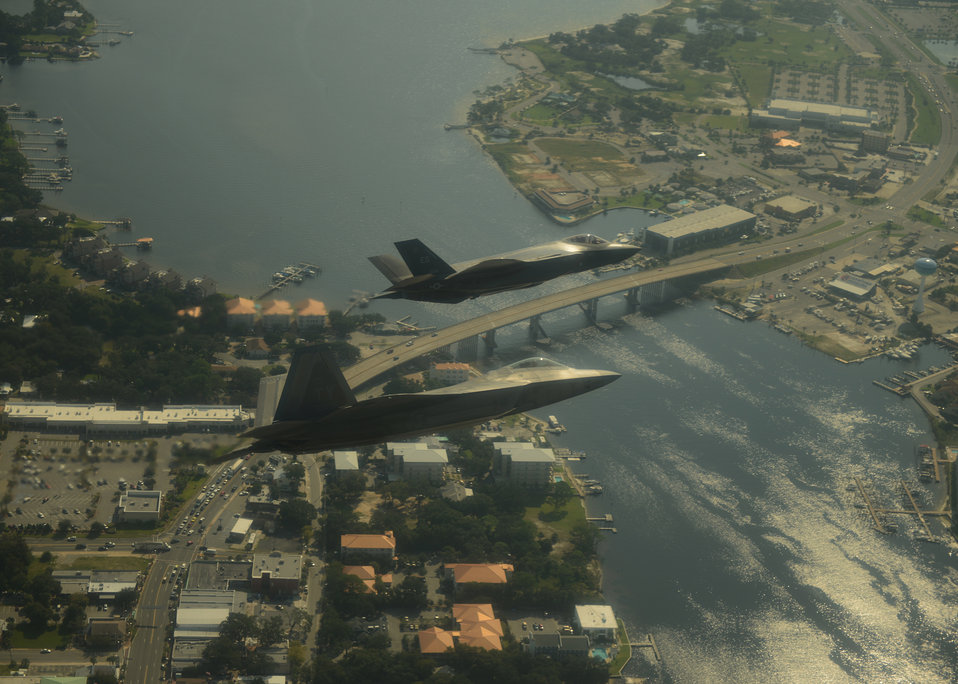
Fifth-generation formation

An F-35A Lightning II joint strike fighter, top, from the 33rd Fighter Wing at Eglin Air Force Base, Fla., and an F-22A Raptor from the 325th Fighter Wing at Tyndall Air Force Base, Fla., soar over the Emerald Coast on Sept. 19, 2012. This was the first time the two fifth-generation fighters have flown together for the Air Force.